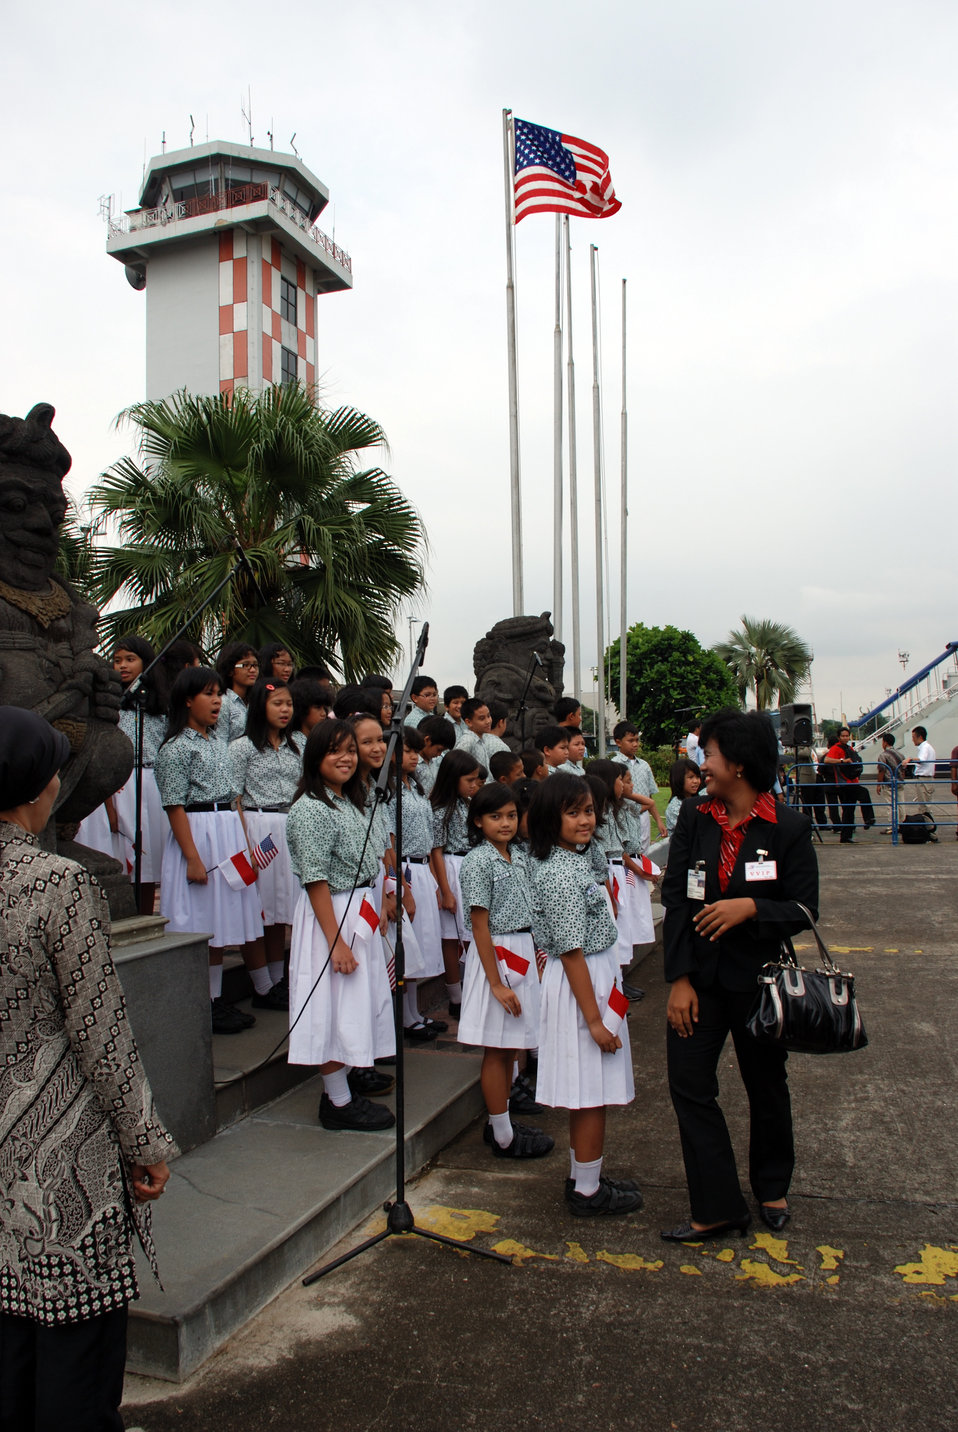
Behind the Scenes: Indonesian Students Prepare for Secretary Clinton's Arrival

Menteng Elementary School No. 1 Student Choir practice for sound check
at Halim Airport before Secretary Clinton's arrival in Jarkarta, Indonesia during the visit of U.S. Secretary of State Hillary Rodham Clinton February 18, 2009.